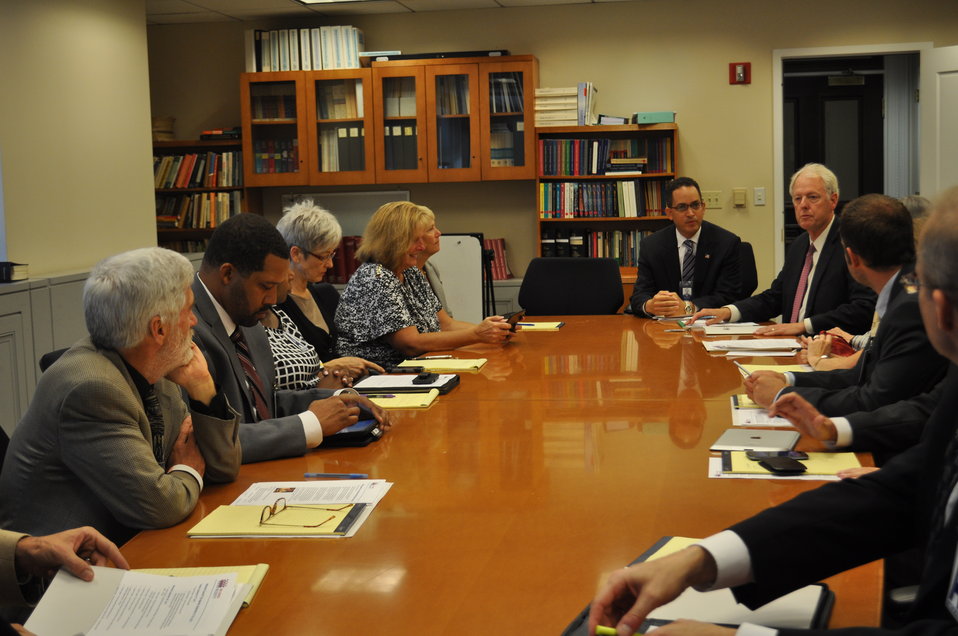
Small Business Majority visits Treasury

Deputy Assistant Secretary for Small Business, Housing, and Community Development Policy Don Graves meets with members of the Small Business Majority who passed by Treasury during their visit to Washington, DC.